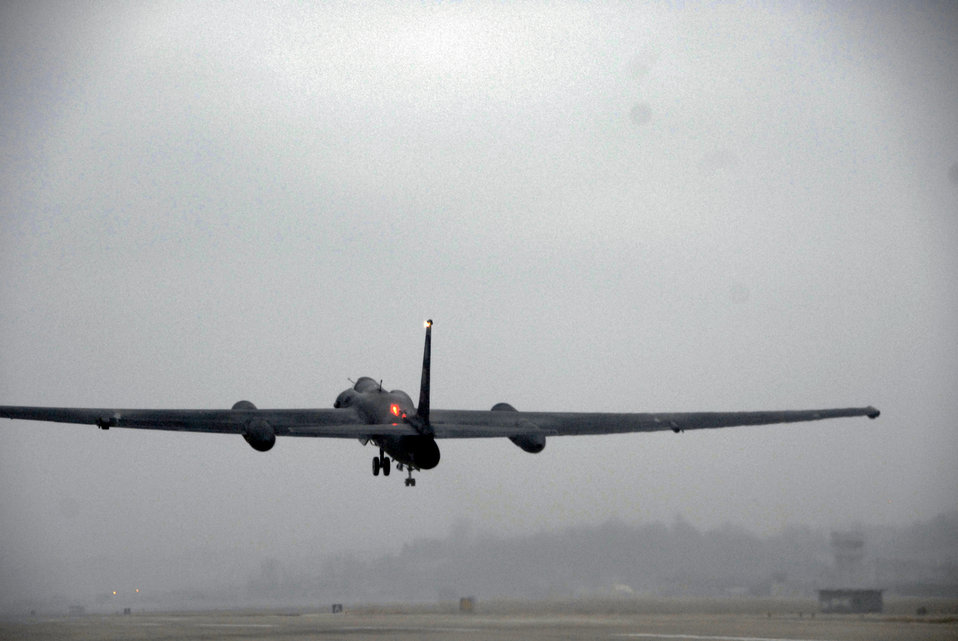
Optical bar camera

A U.S. Air Force U-2 high-altitude, all-weather surveillance and reconnaissance aircraft departs from Osan Air Base, South Korea, March 13, 2011, to capture imagery of the earthquake- and tsunami-affected areas of Japan.